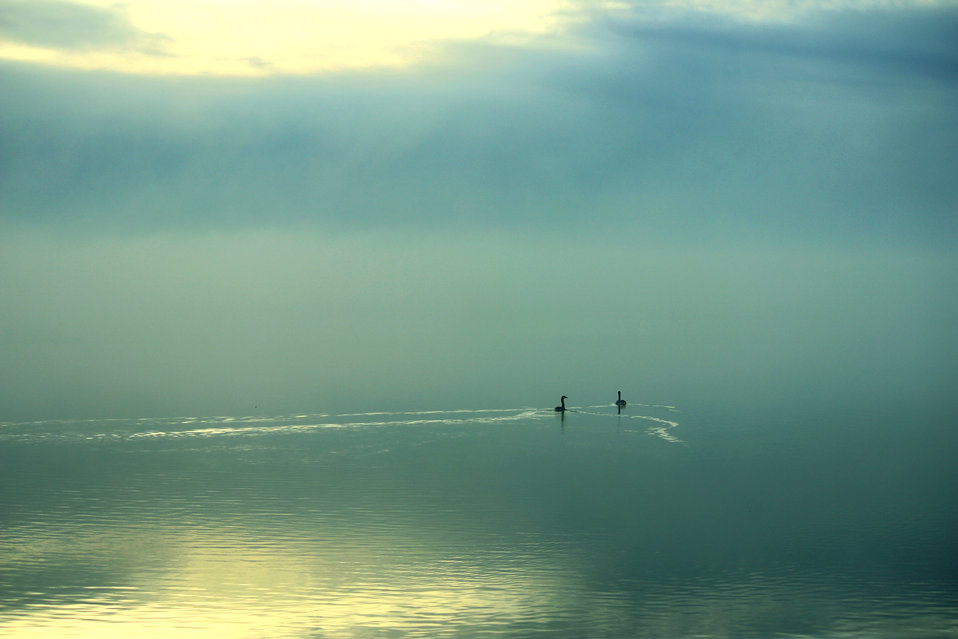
Endless Bliss

In the Kulm Wetland Management District, the fog on this particular morning created a smooth, calming reflection.